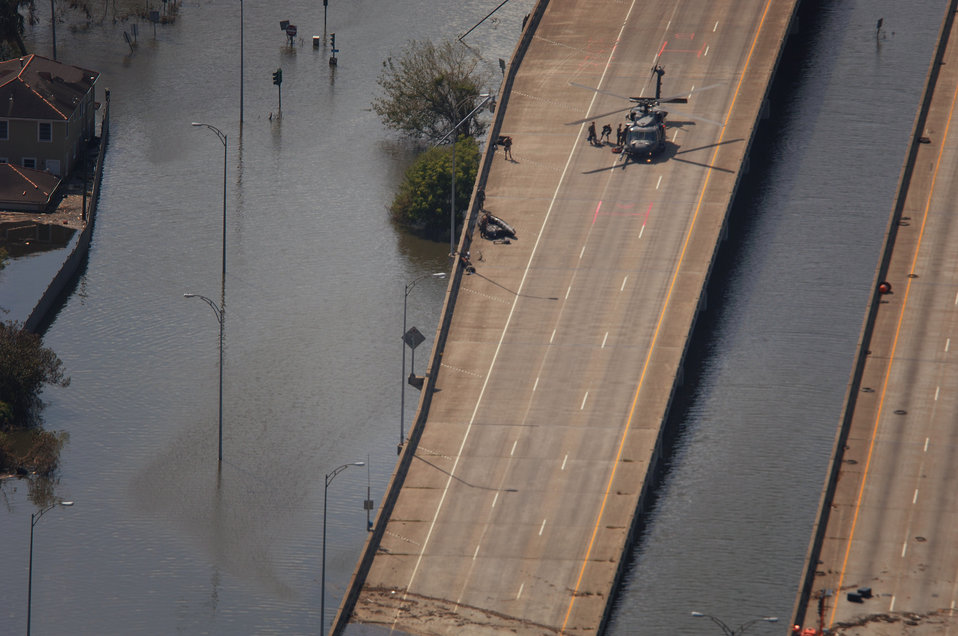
Airmen 'pave' way for help

NEW ORLEANS -- An HH-60G Pave Hawk rescue helicopter use a highway in New Orleans as a temporary collection and extraction point for evacuees rescued from the flood waters of Hurricane Katrina's devastating aftermath.